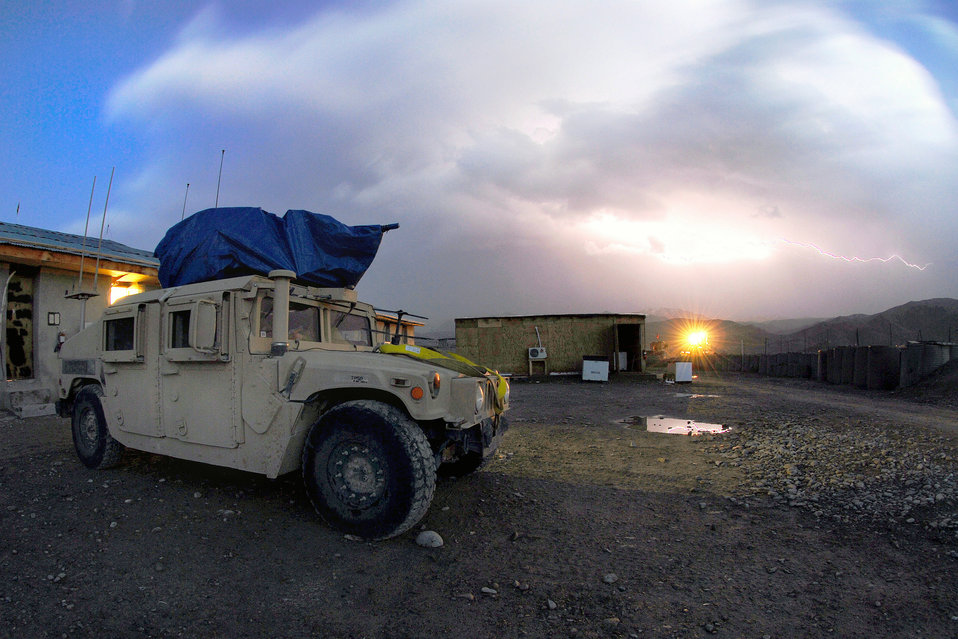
Stormy weather

As a storm approaches Feb. 19, lightning flashes over Forward Operation Base Lane in Afghanistan.